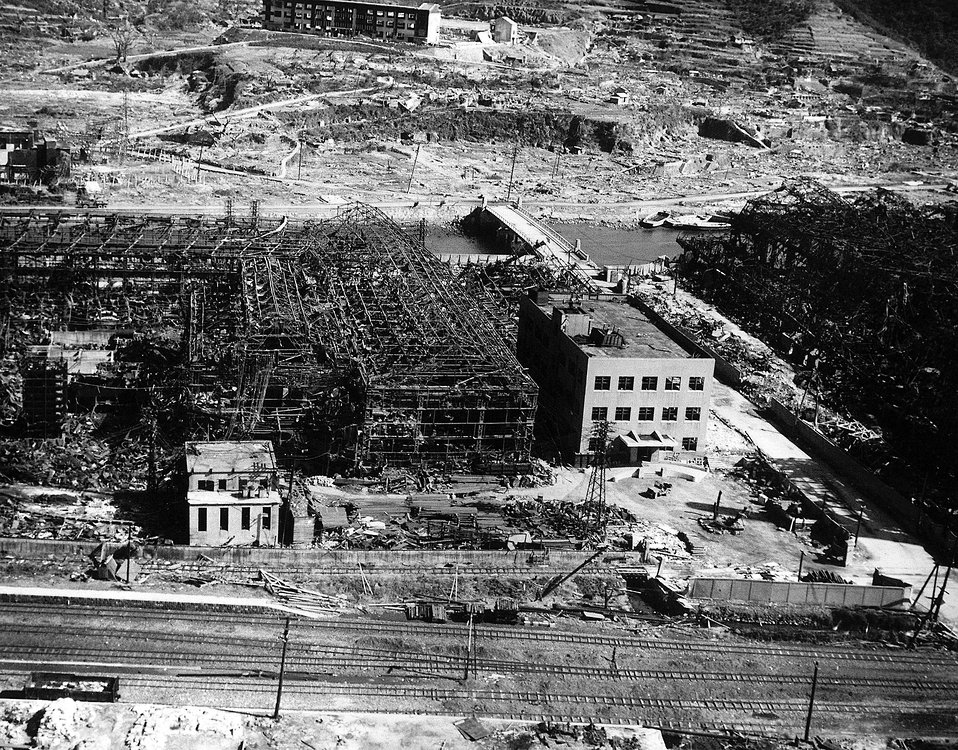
ATOMIC BOMBING OF JAPAN